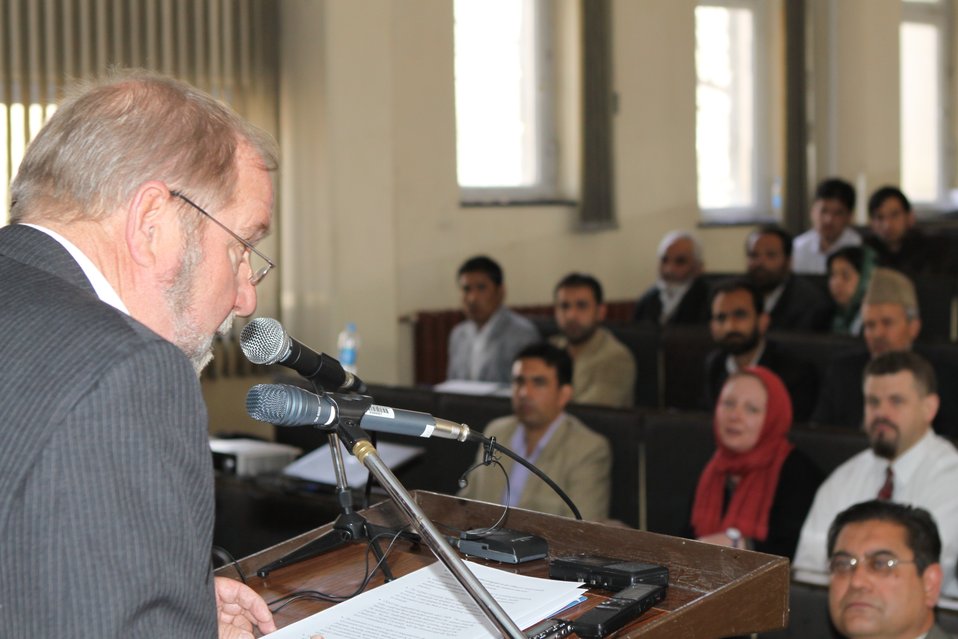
Female University Students Complete Internship

Kabul, Afghanistan | March 16, 2011 – In response to a demand for qualified Afghan engineers, Kabul University celebrated completion of an intensive five-month Mentor Protégé Training Program today by 10 female fourth year university students. The Training Program is a joint effort between the Government of the Islamic Republic of Afghanistan, the U.S. Agency for International Development (USAID), and the Universities of Kabul, Kandahar, Alberoony in Kapisa, Shiekh Zayed in Khost. The graduation ceremony highlighted collaboration with these national institutions in building the technical skills of young Afghans, made possible by USAID.

Four of the interns are engineers, while the remaining six are from the faculties of computer science, economics, and psychology.

Speaking about the event, H.E. Minister of Public Works Abdul Qudus Hamidi said, “The future of Afghanistan lies in developing the skills of our youth, and the engineering skills of these graduates today represent a small but important step forward for the country.”

Keynote speakers at the ceremony included H.E. Deputy Minister of Higher Education Abdul Rahim; USAID Senior Deputy Mission Director Robert Hellyer; and Chancellor of Kabul University Professor Hamidullah Amin. Approximately 150 people, including current and former students attended the graduation.

Launched last year, the Mentor Protégé Training Program has provided qualifying students the opportunity to intern with USAID’s Strategic Provincial Roads-South and East Afghanistan project and gain practical experience in a real work environment. The goal of the program was to offer interns the opportunity to gain hands-on experience to reinforce their formal studies. A total of 30 students from four national universities have benefitted from this program.

“The promotion of women’s rights is integrated into the overall U.S. Government development strategy and can be found in key programs, including education, healthcare, security, rule of law, political participation, agriculture, and economic development,” said Robert Hellyer. “The U.S. Government is committed to the Afghan leadership of programs that directly enhance development, particularly as it relates to women’s issues.”

This event also highlighted the learning achievements of students and emphasized the importance of hands-on internship programs. The curriculum is designed to instill students with the knowledge and confidence to qualify for engineering positions upon completion of their fourth year at their respective universities.